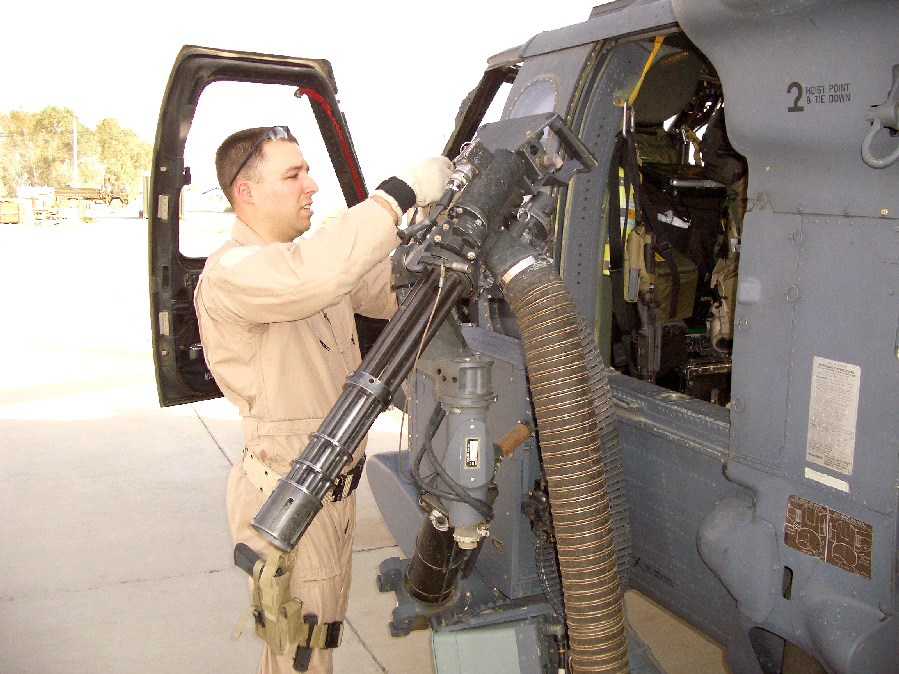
Total force combats explosive devices

KANDAHAR AIRFIELD, Afghanistan -- Tech. Sgt. Jason Burger checks out the weapon systems on an HH-60G Pave Hawk before a night mission. He is a flight engineer with the 451st Air Expeditionary Group here and is deployed from the 305th Rescue Squadron at Davis-Monthan Air Force Base, Ariz.